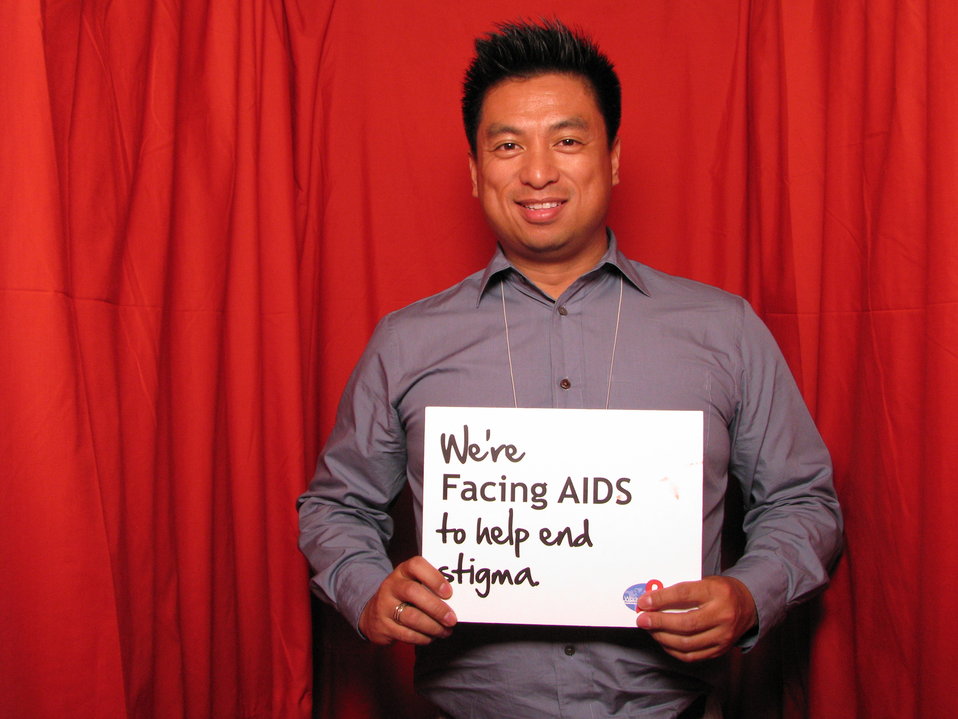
We're FACING AIDS to help end stigma.

From the AIDS.gov photo booth at the U.S. Conference on AIDS, September 2010 (Orlando, FL).